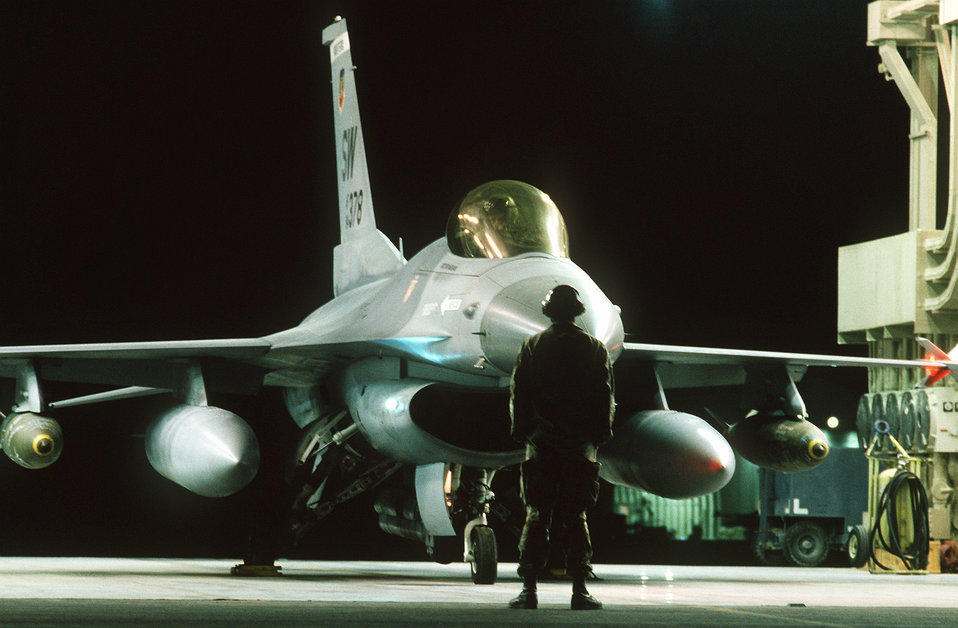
F-16C Fighting Falcon

1990's -- Sgt. Ken Mahaley, crew chief, 17th Avionics Squadron, launches an F-16C Fighting Falcon fighter aircraft of the 363rd Tactical Fighter Wing, Shaw Air Force Base, S.C., during the first wave of the air attack on Iraq in support of Operation Desert Storm. The Falcon is armed with Mark 84 2,000-pound bombs mounted under its wings.